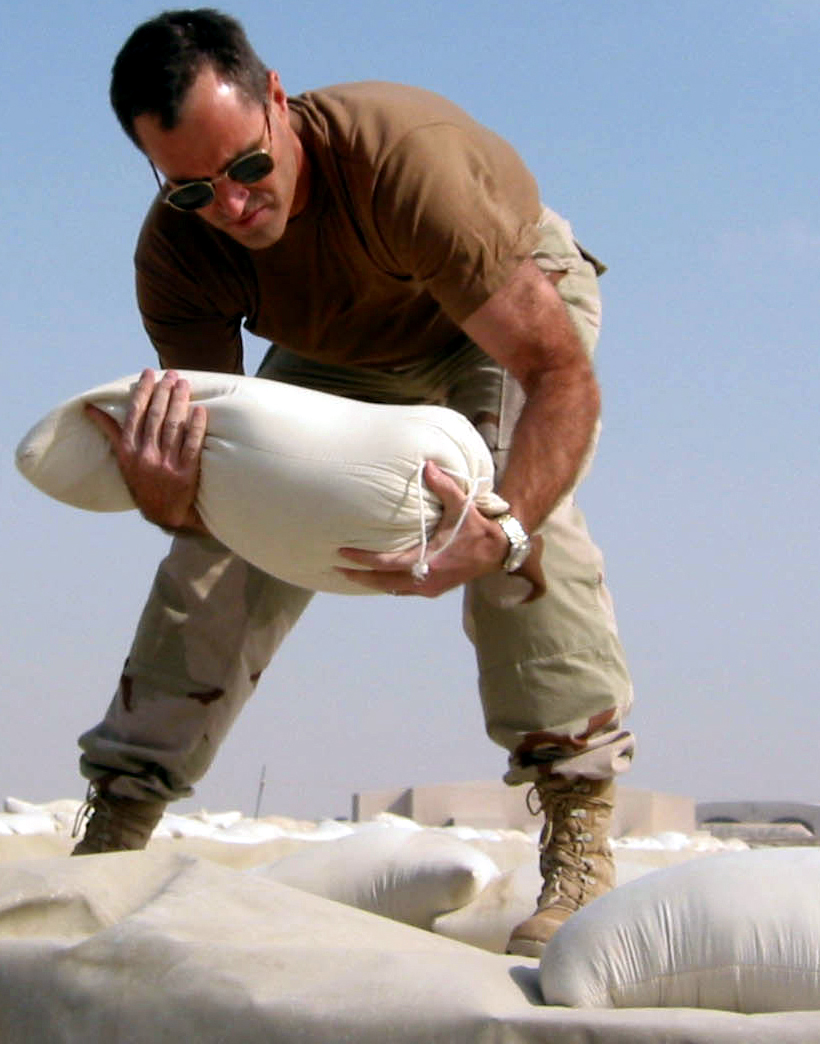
In the bag

OPERATION ENDURING FREEDOM (AFPN) -- Col. Greg Augst, 380th Air Expeditionary Wing commander, throws his share of sandbags during the two-day effort to secure liners for the fuel farm expansion project at a forward-deployed location.